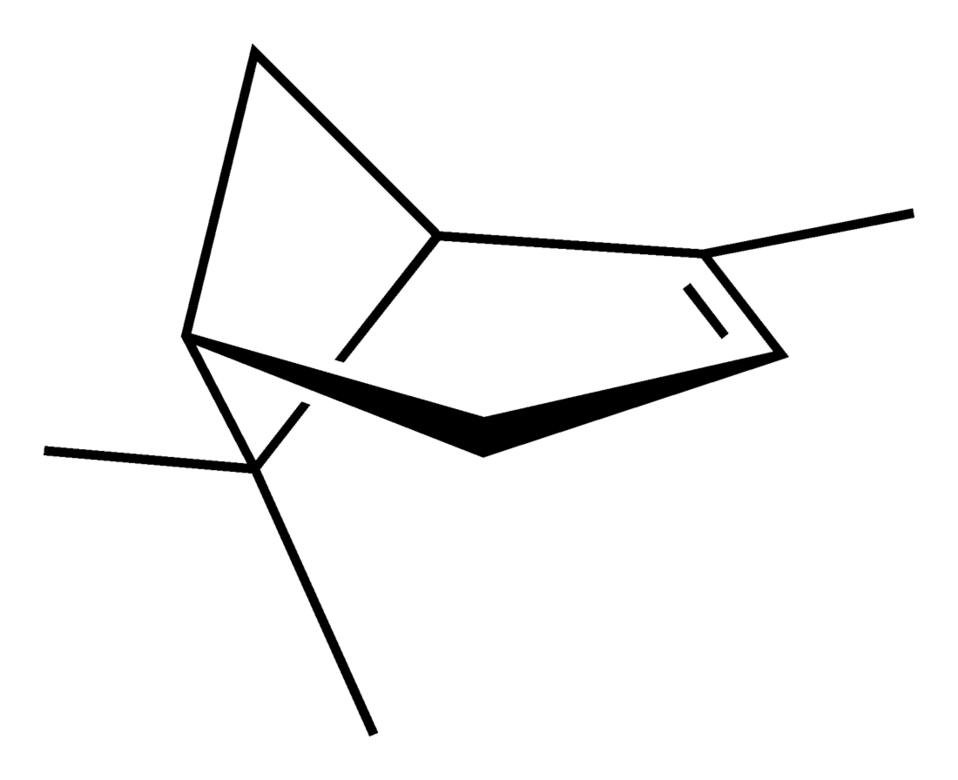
Projected skeletal formula of the (1S)-(−)-α-pinene molecule, C10H16. Based on Image:(1S)-(−)-alpha-pinene-from-xtal-3D-sticks.png, with structural data from A. D. Bond and J. E. Davies (November 2001). '(1S)-(−)-α-Pinene'. Acta Cryst. 'E57' (11): o1039-o1040. DOI:10.1107/S1600536801016415. Image generated in Accelrys DS Visualizer.